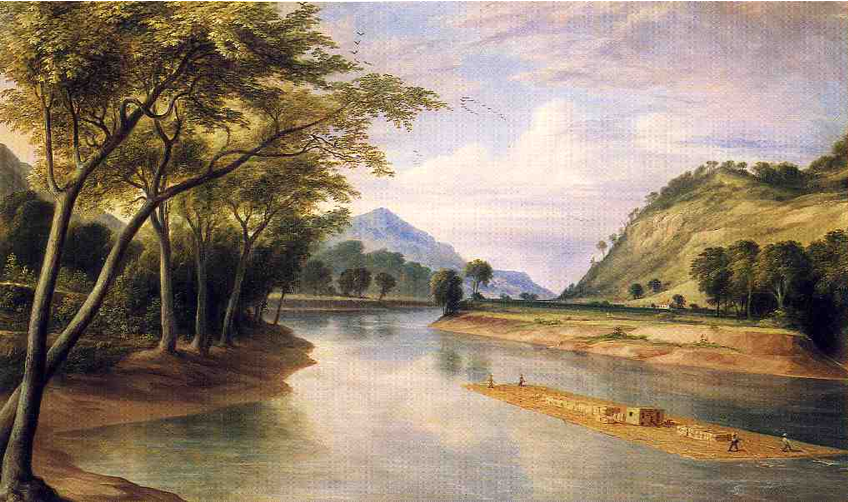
1855 OhioRiver Near Marietta byHCPratt